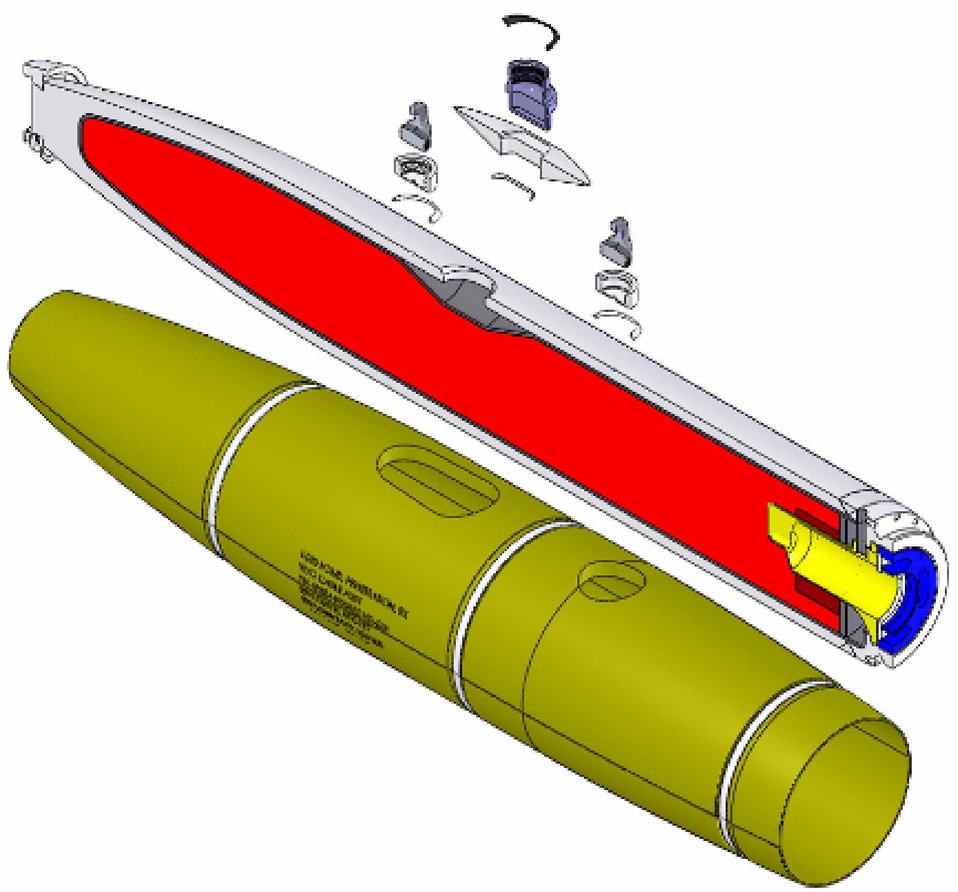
Computational analysis improves I-500 warhead survivability

The design concept for the I-500 warhead is shown. The intent of this warhead is to provide hard-target penetration capability while duplicating the properties of mass, external dimensions and external interfaces that are hallmarks of the Mk-82 general-purpose bomb.